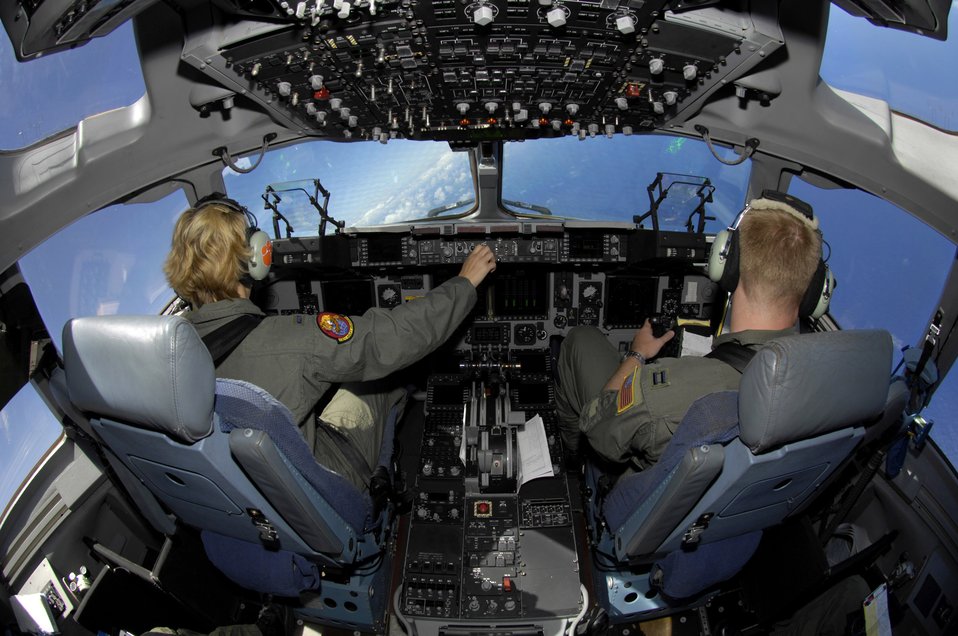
Practice makes perfect

C-17 Globemaster III pilots 1st Lt. Lindsay McWhirter (left) and Capt. Jonathan Mackay practice low-level flying off the coast of Hawaii May 30. The pilots are from the 535th Airlift Squadron, Hickam Air Force Base, Hawaii.